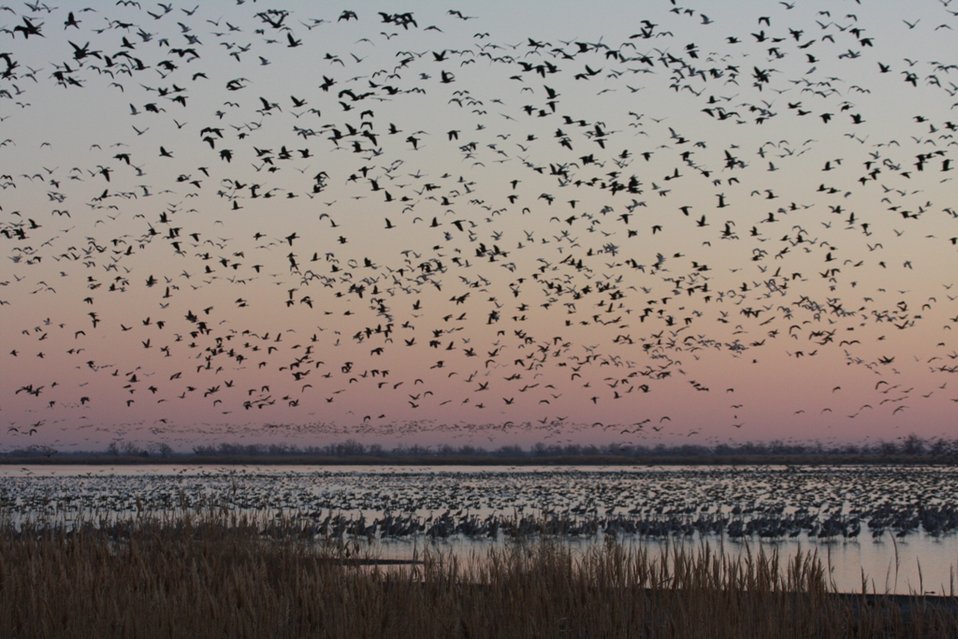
Waterfowl at Quivira National Wildlife Refuge